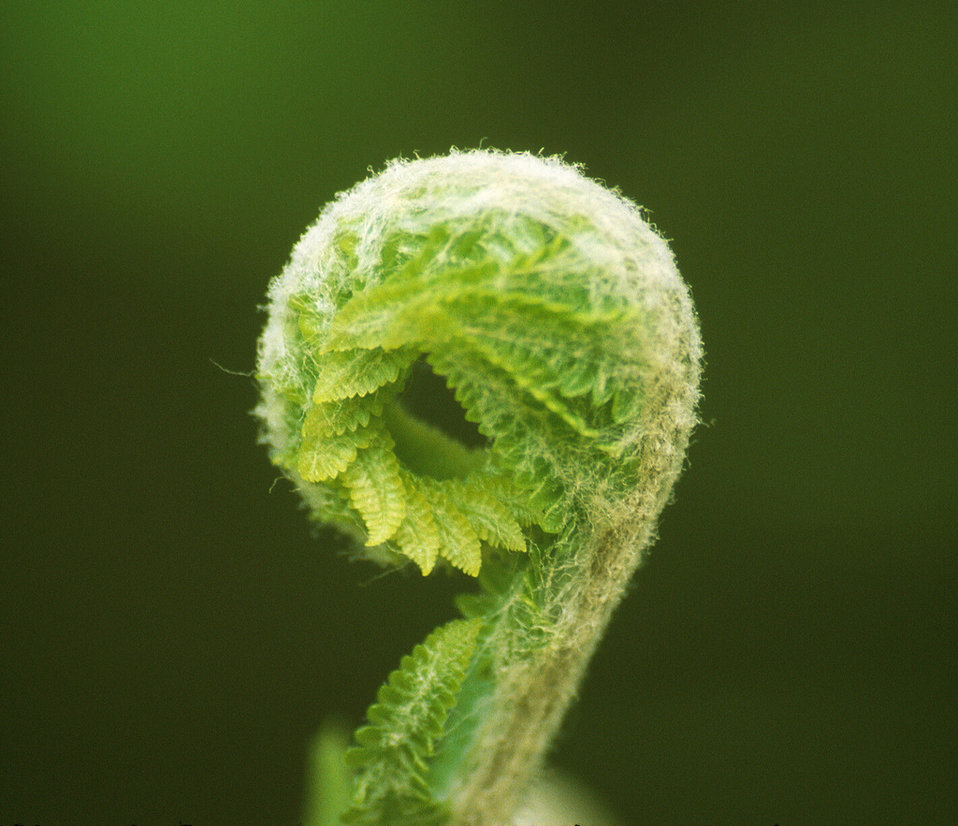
Fern Fiddlehead

The tender fronds of a fern unfurl in early summer.